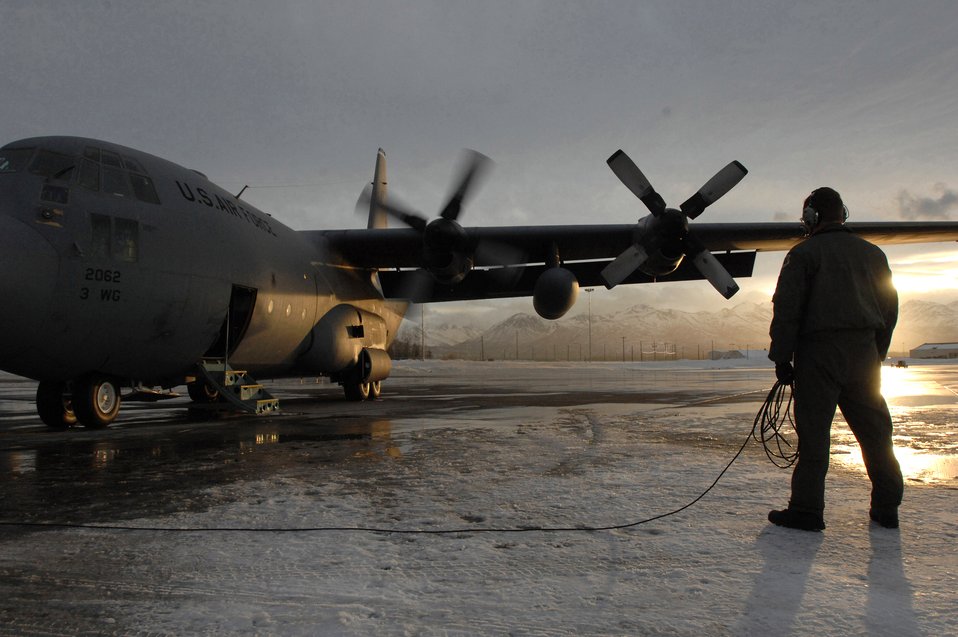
Northern exposure

An Airman directs engine start up on a C-130 Hercules prior to an training mission Feb. 1 from Elmendorf Air Force Base, Alaska. The C-130 belongs to the 517th Airlift Squadron. The 517th AS will replace its fleet of C-130s with the C-17 Globemaster III in 2007.